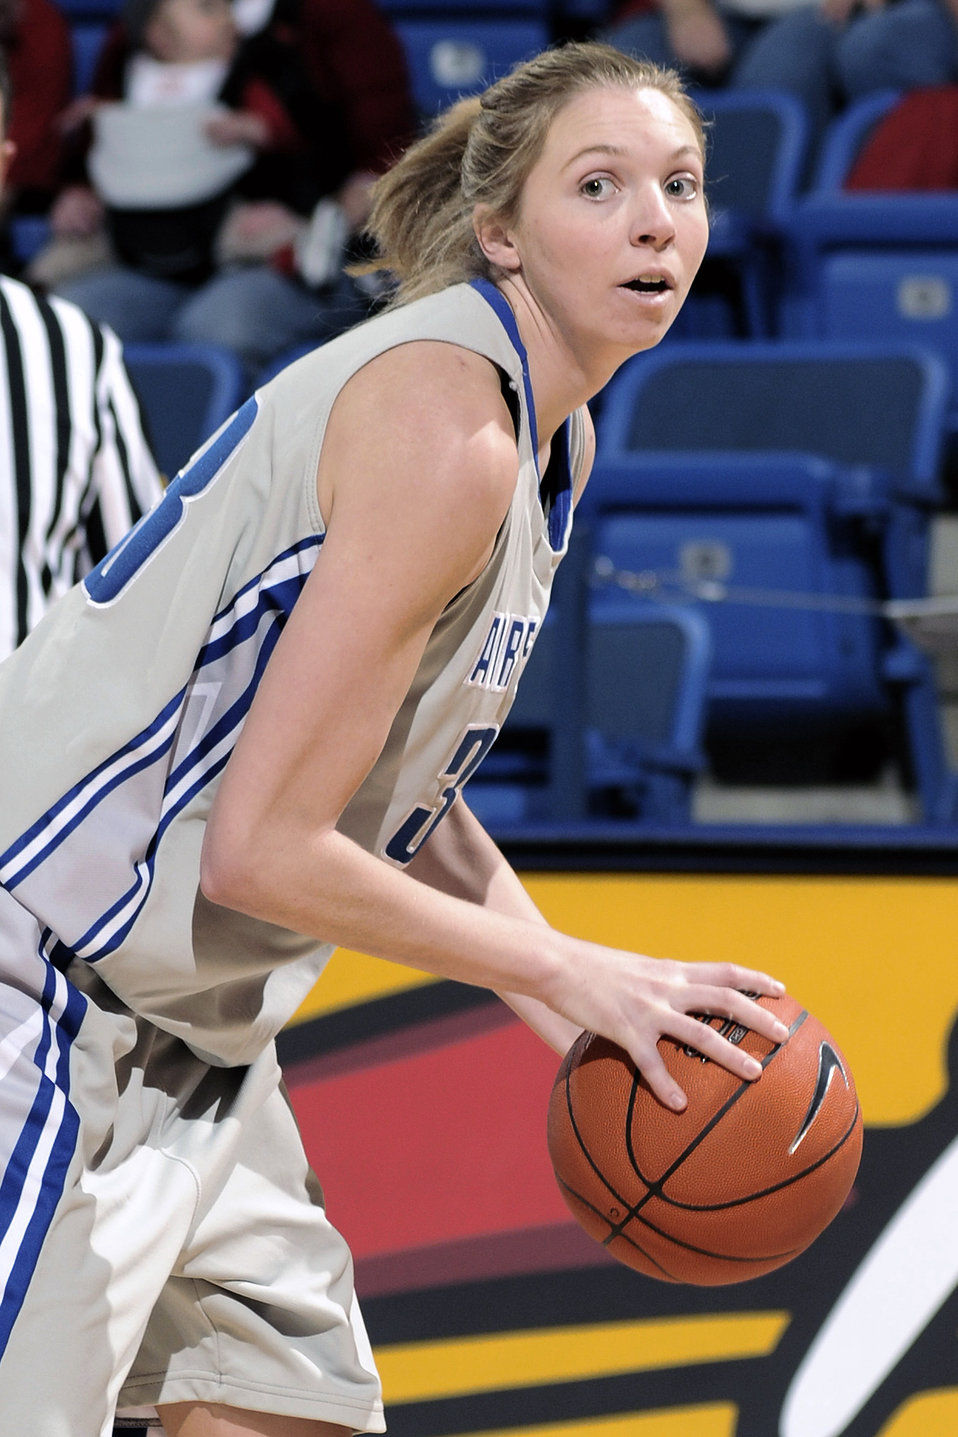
Aiming high

U.S. Air Force Academy junior forward Kathleen Schjodt looks to pass during the 73-39 loss against the New Mexico Lobos Jan. 9 at the Academy in Colorado. The Falcons return to action Jan. 14 at Utah.